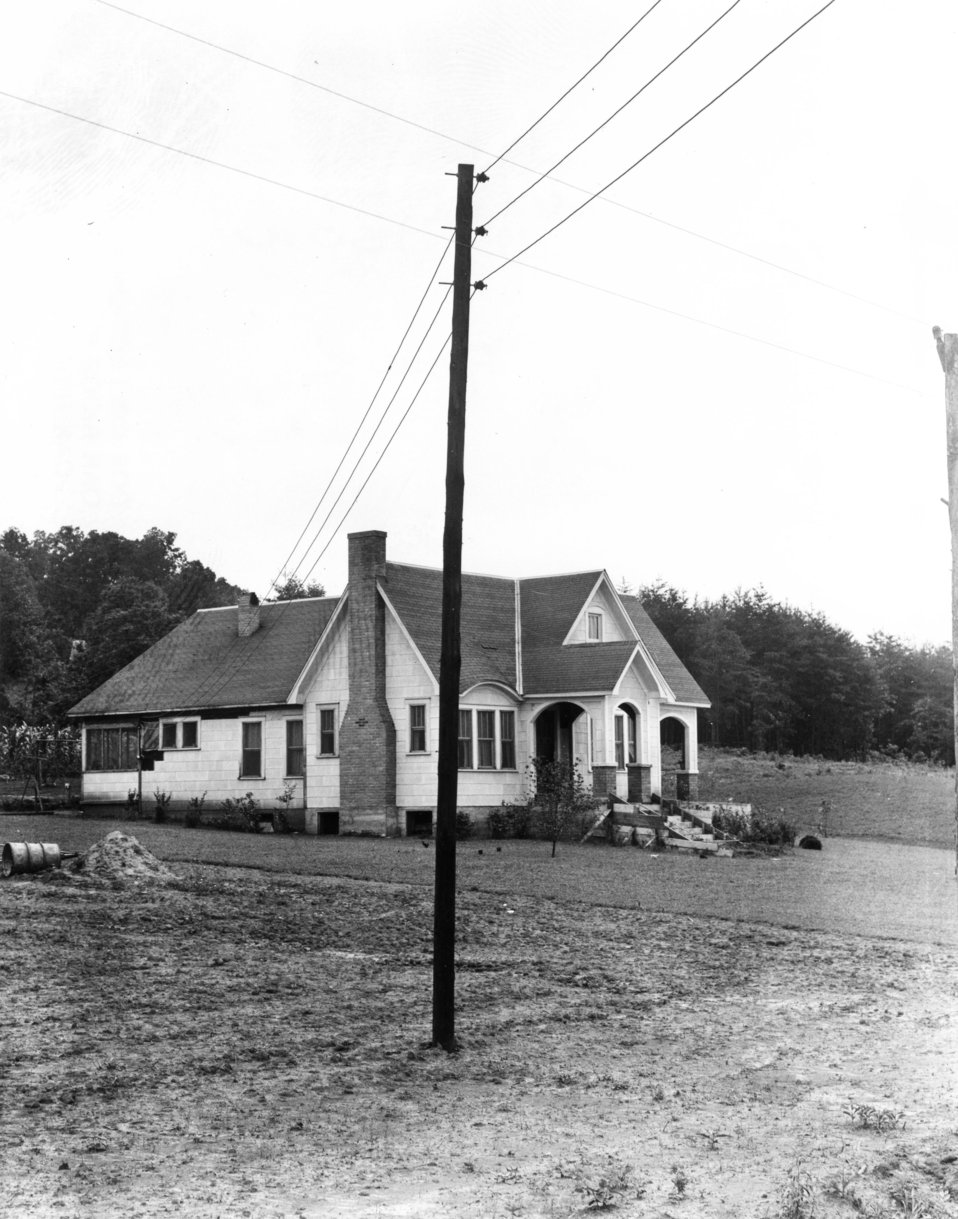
Early settlers at Oak Ridge